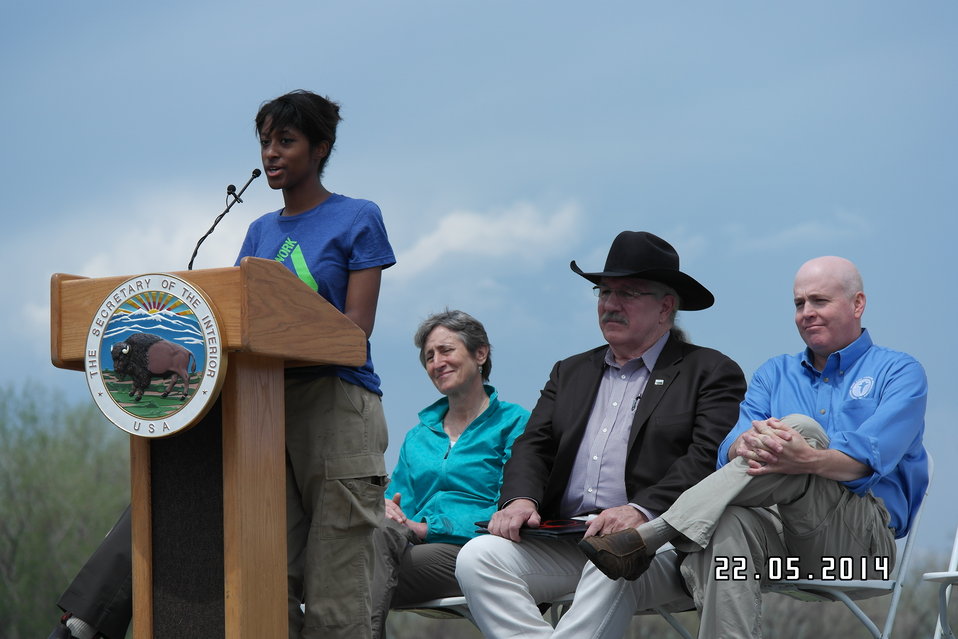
Secretary Jewell Announces $6.7 for Youth Conservation Jobs

Jewell made the announcement at an event at Rocky Mountain Arsenal National Wildlife Refuge outside Denver, Colorado, where she was joined by U.S. Department of Agriculture (USDA) Deputy Under Secretary for Natural Resources and the Environment Arthur “Butch” Blazer; Greg Knadle, Vice President for Government Relations of the National Fish and Wildlife Foundation (NFWF); Refuge Manager David Lucas and youth corps members of Groundwork Denver.